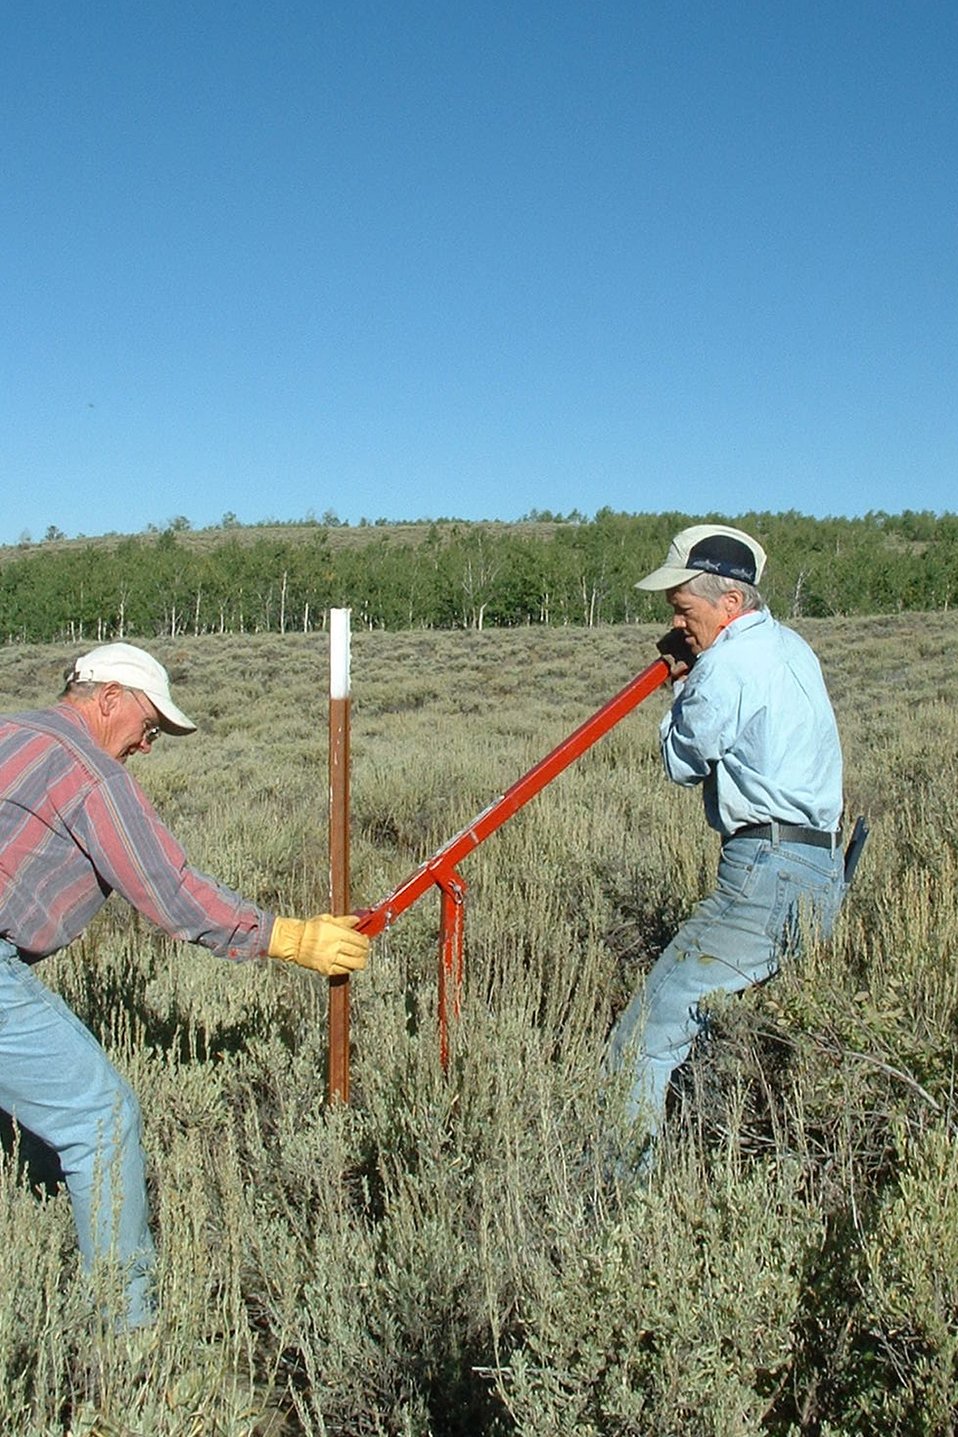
Volunteers work with BLM to remove over a 100 miles of old fence.